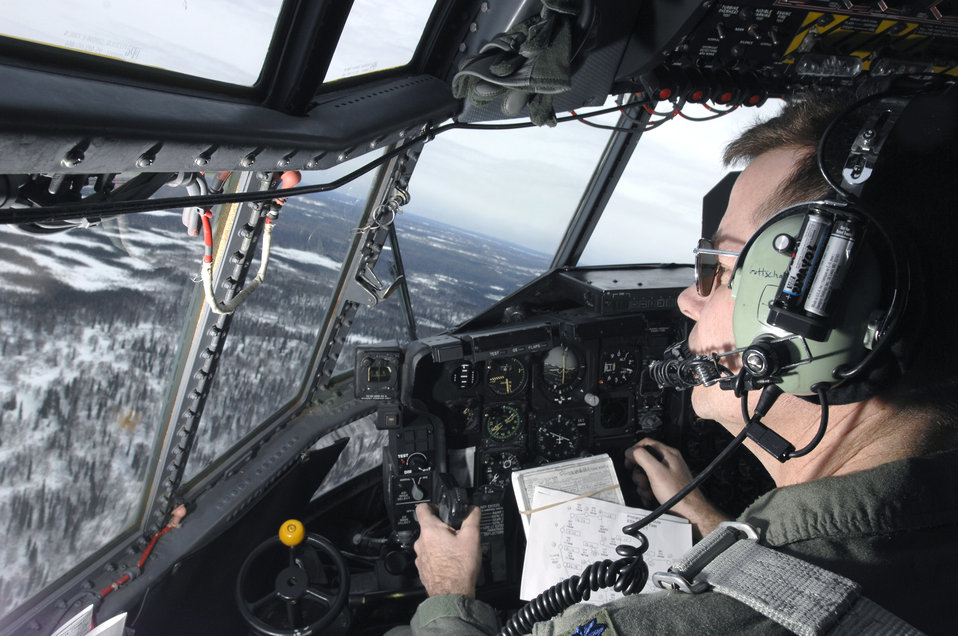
C-130s leaving Alaska

Lt. Col. Gary Gottschall admires the view during the final flight March 23 of a C-130 Hercules belonging to the 517th Airlift Squadron at Elmendorf Air Force Base, Alaska. After 43 years of continuous service in Alaska, the flight marked the end of the C-130 era at the 517th. Airmen at Elmendorf soon will see C-17 Globemaster IIIs taking over the airlift mission. Colonel Gottschall is the 51th AS commander.